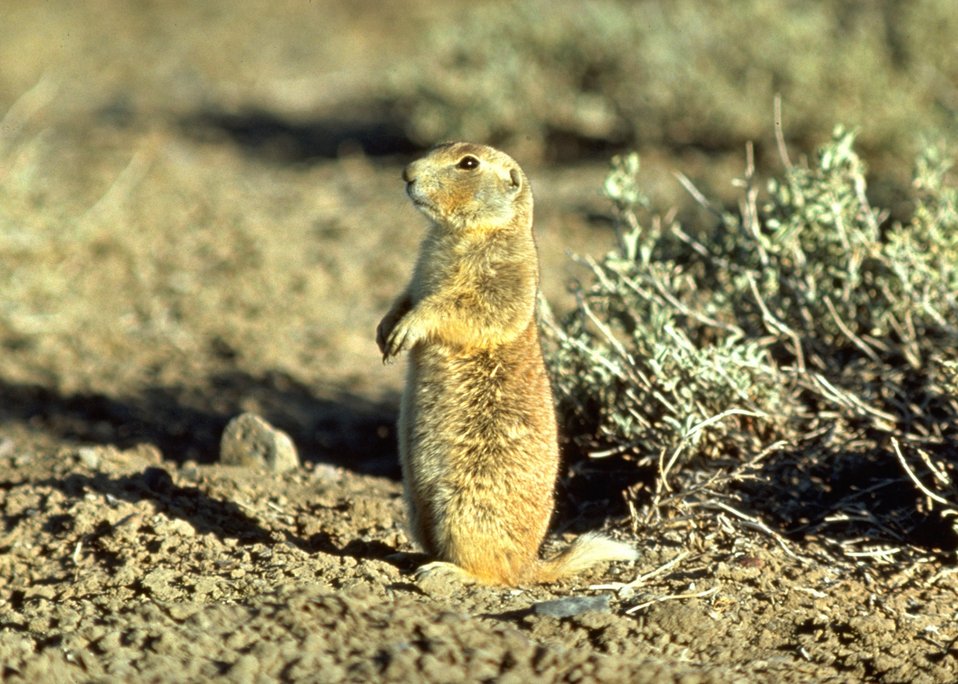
Prairie dogs are stocky burrowing rodents that live in colonies called “towns.” All species of prairie dogs are found in grassland or short shrubland habitats.